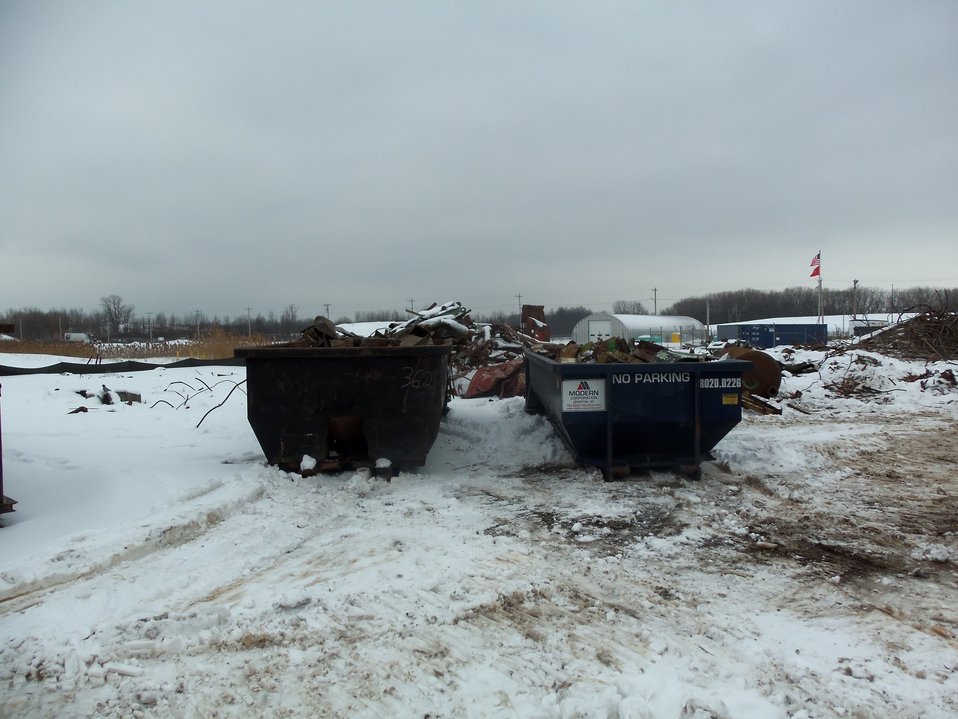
Debris containers from Building 401.

Activities from the Niagara Falls Storage Site, which is associated with the former Lake Ontario Ordnance Works. Formerly Utilized Sites Remedial Action Program (FUSRAP), a program initiated in 1974 to identify, investigate and clean up or control sites that were part of the Nation's early atomic energy and weapons program. Activities at the sites that are eligible for FUSRAP were conducted by Manhattan Engineer District (MED) or the Atomic Energy Commission (AEC), both predecessors of the Department of Energy (DOE). The U.S. Army Corps of Engineers was assigned management of FUSRAP by Congress in 1997.